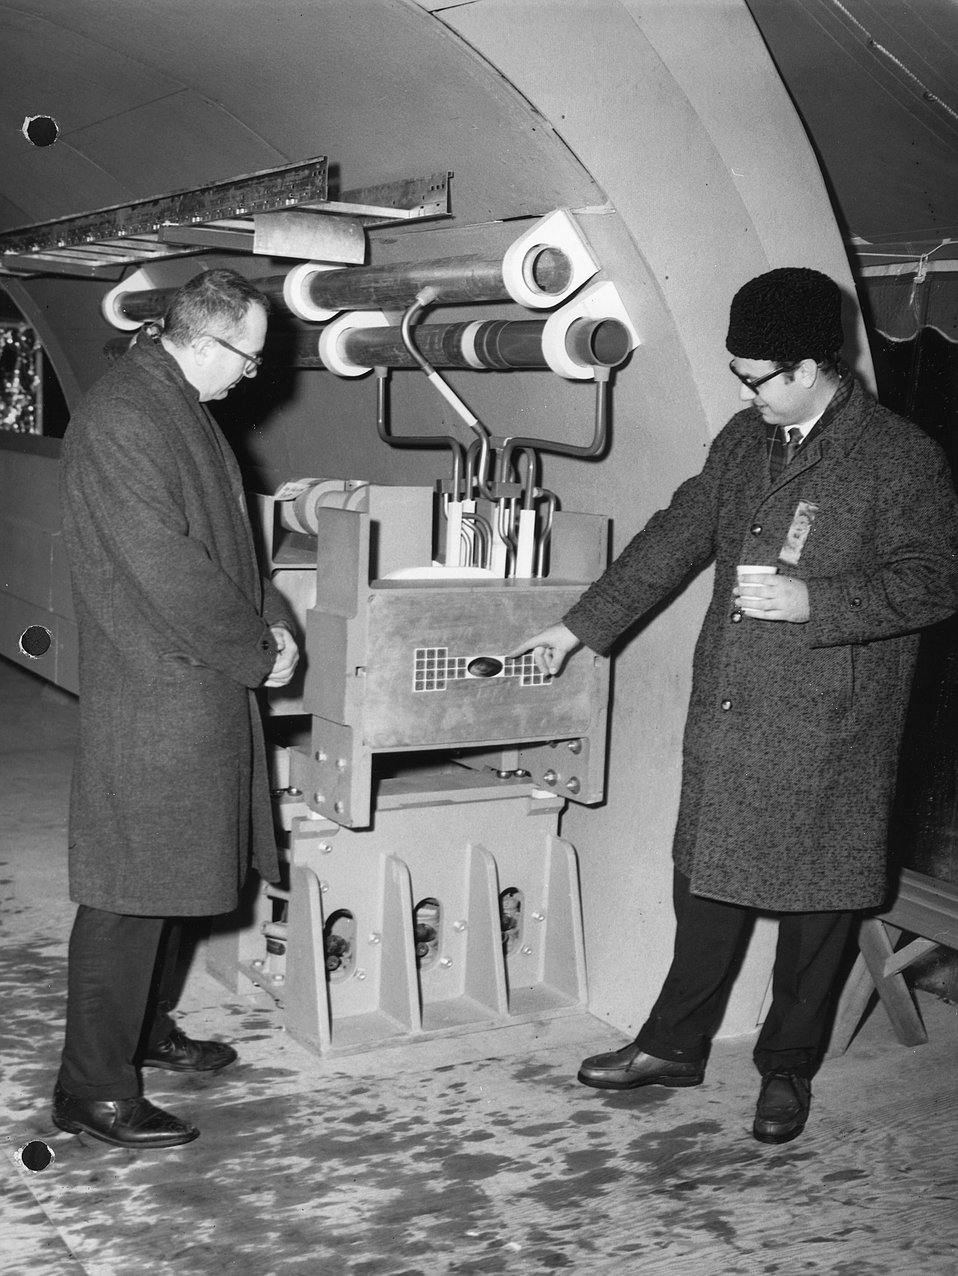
George Wheeler, pointing to a magnet in a model of the Main Ring located in The Tent next to the Directors' Offices after the groundbreaking ceremonies of the Linac.